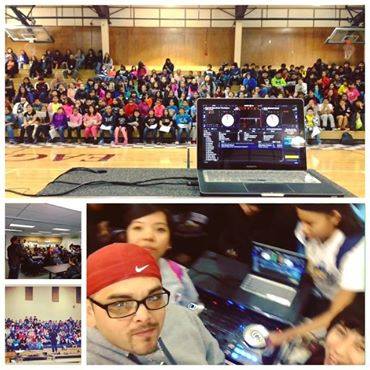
Drug facts week for ESCAPE Project in Wyoming